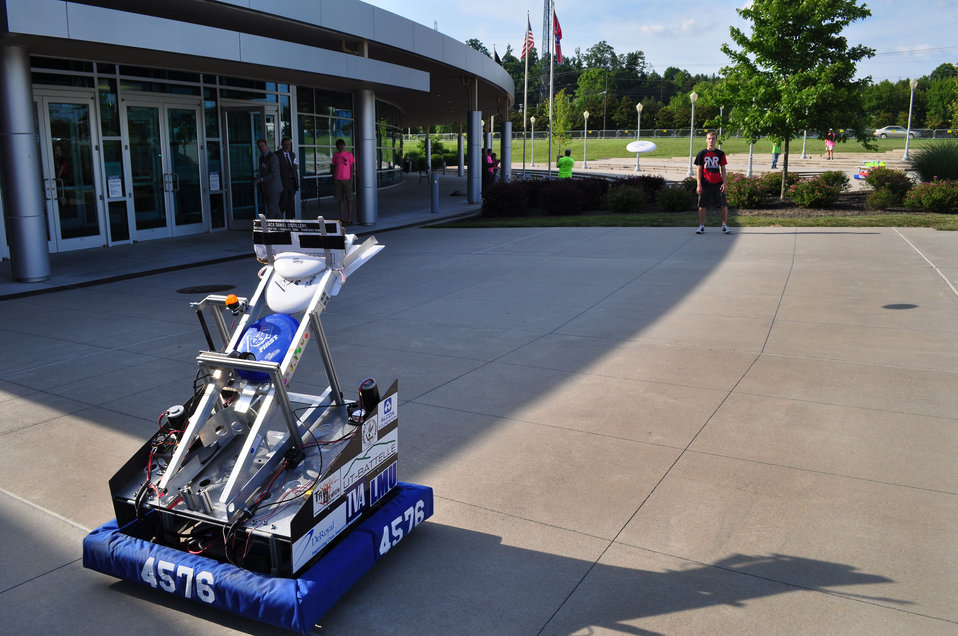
Tennessee Valley Corridor 2013 Oak Ridge

13-062 DOE photo Lynn Freeny 5-29-2013 Oak Ridge Tennessee